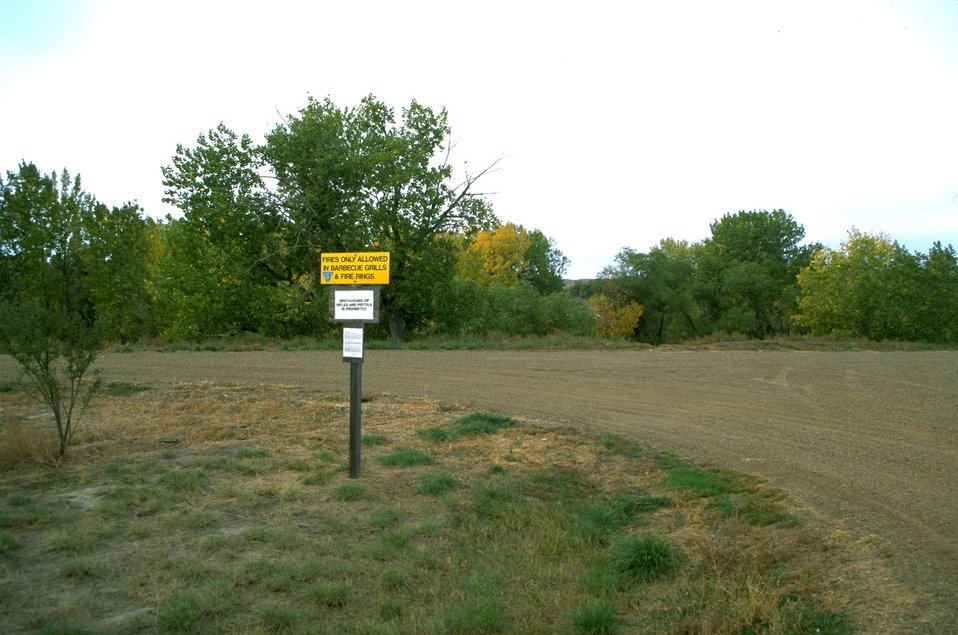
Signs inside the Matthews Recreation Site